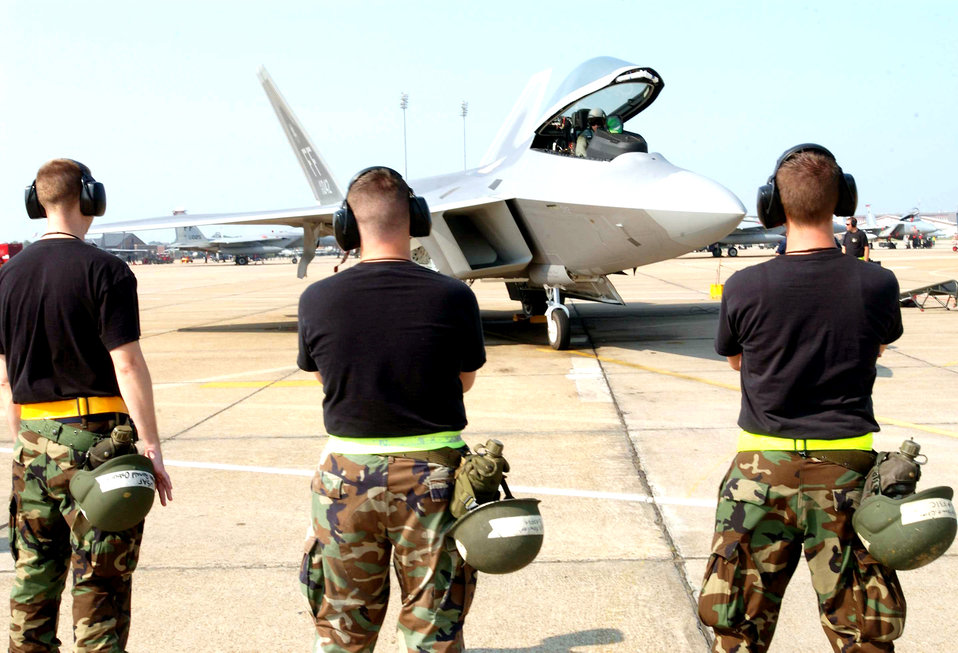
Raptor practice

LANGLEY AIR FORCE BASE, Va. -- (From left) Staff Sgts. Ronald Osburn and Andrew Fowler, and Senior Airman Clinton Postlethwait await the shutdown of an F/A-22 Raptor flown by Capt. John Echols during an exercise here. The exercise evaluated the 1st Fighter Wing's ability to prepare and deploy people, equipment and support assets to a combat environment.